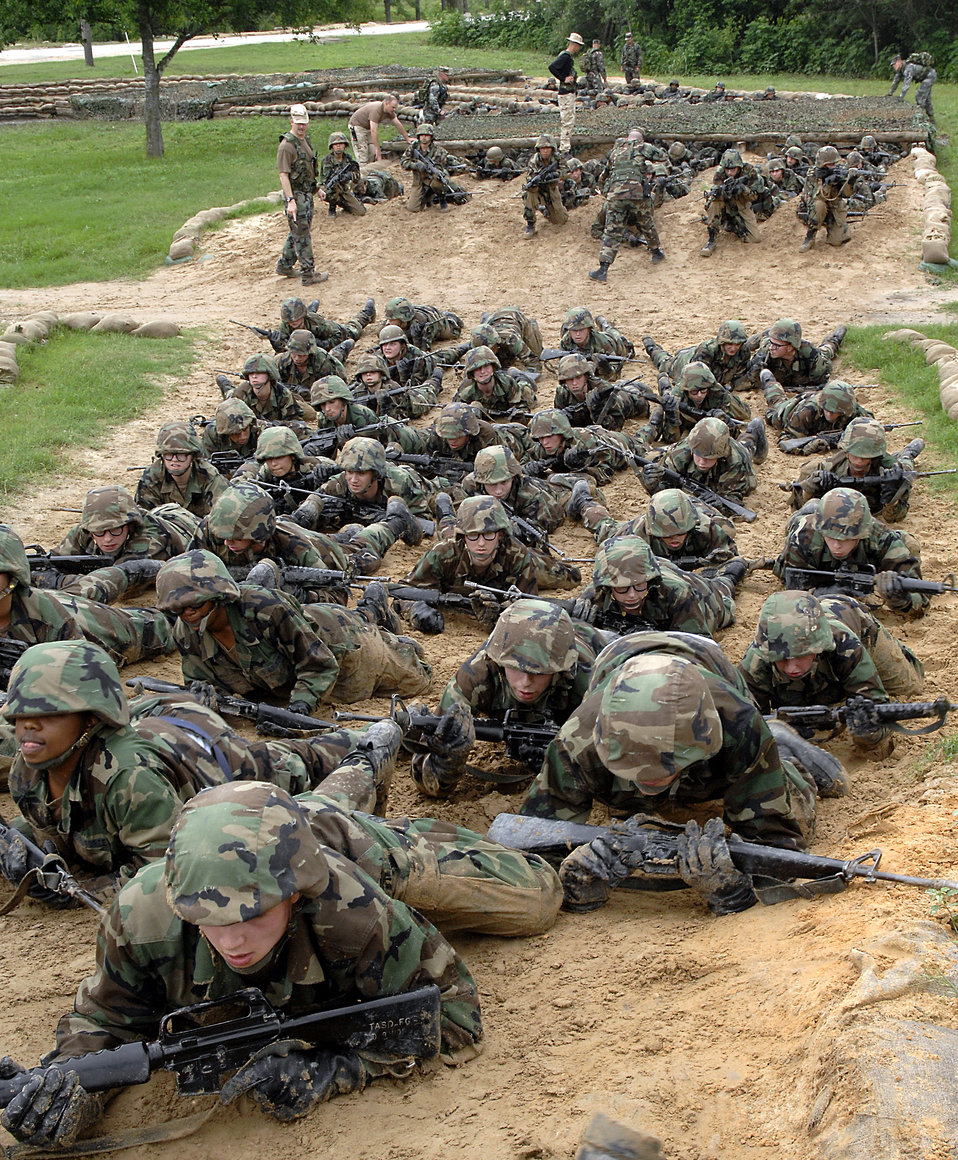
Airmen live, learn warrior ethos

Basic trainees navigate through the tactical assault course at the field training site on Lackland Air Force Base, Texas on May 2. This half-mile course, consisting of numerous obstacles, tests the trainees' newly-acquired defensive tactics skills and enforces the need to properly communicate with their wingmen.